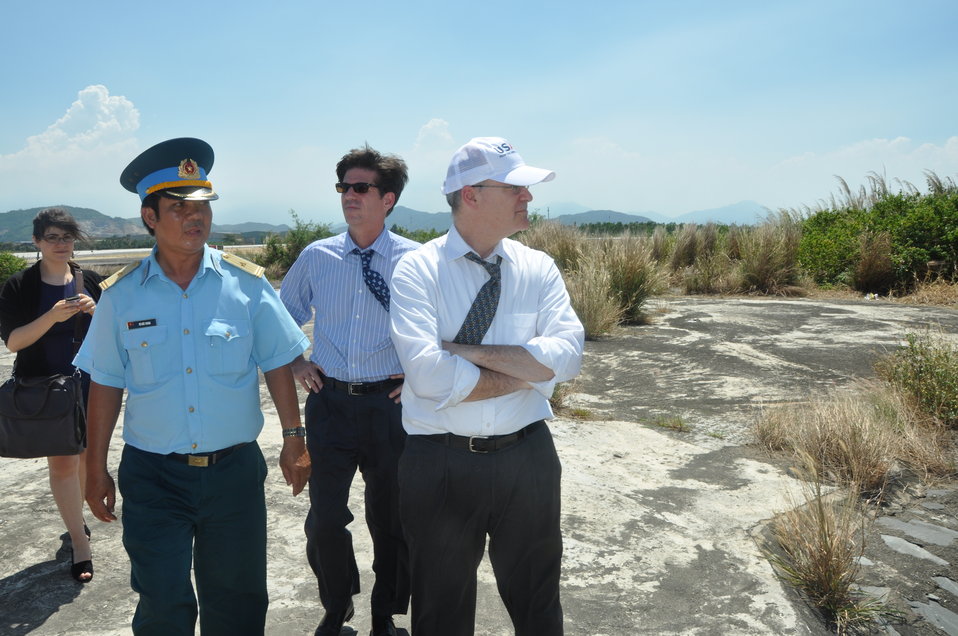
USAID Deputy Administrator Donald Steinberg and delegation visit Danang Airport

USAID Deputy Administrator Donald Steinberg Visits Vietnam